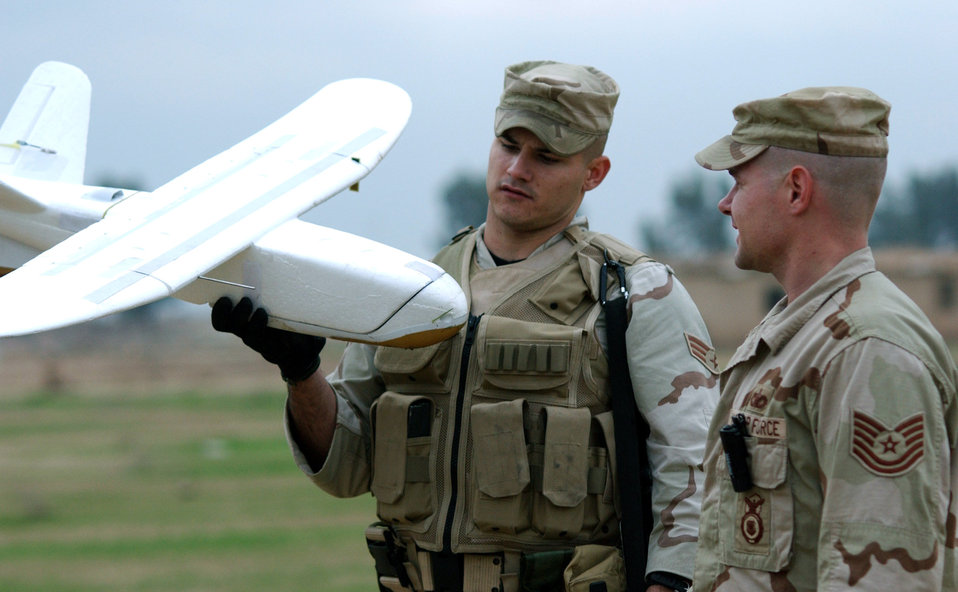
Desert Hawk

BALAD AIR BASE, Iraq (AFPN) -- Senior Airman David Tillery (left) and Tech. Sgt. Lloyd Joyner look over Desert Hawk after a mission. The 7-pound unmanned aerial vehicle allows security forces to see beyond a base's perimeters and provide accurate, real-time visual assessments of detected threats. Both airmen are assigned to the 332nd Expeditionary Security Forces Squadron and are deployed from Shaw Air Force Base, S.C.